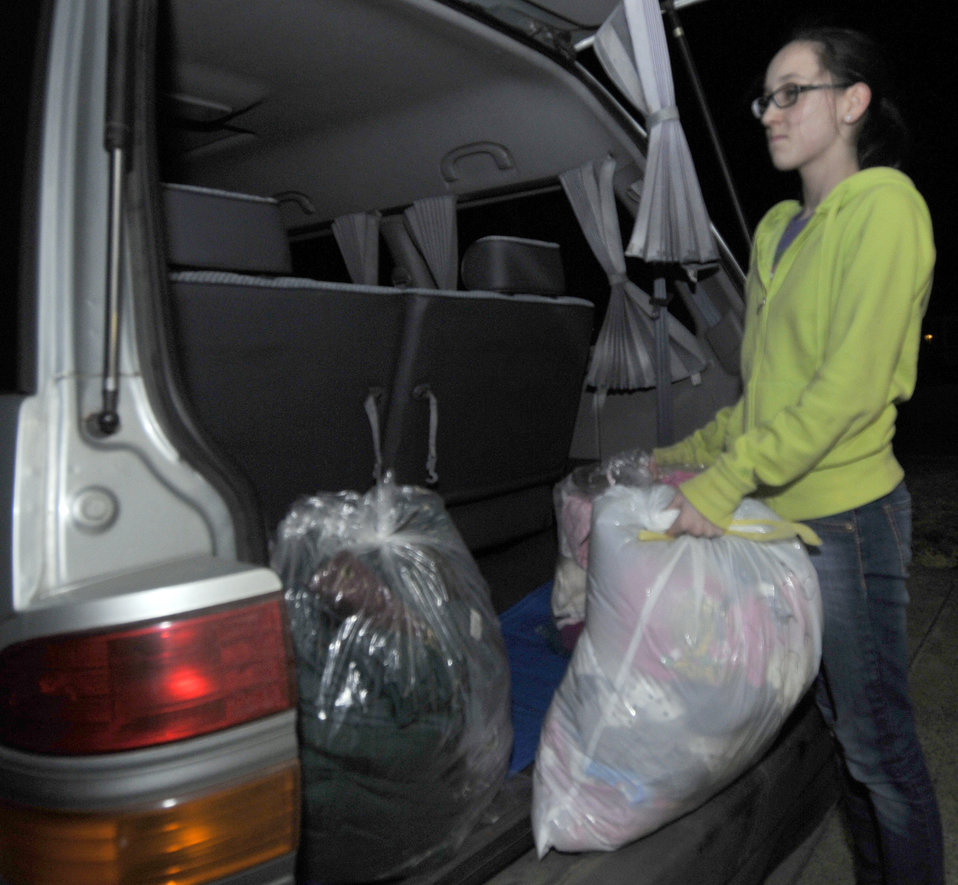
Spirit of giving unshaken in Misawa

Katie O'Czopek removes bags of clothing donations from her father's van Mar. 14, 2011, at Misawa Air Base, Japan. Edgren High School officials collected donations for the Misawa City community. Ms. O'Czopek is the daughter of Mark O'Czopek, a government contractor.